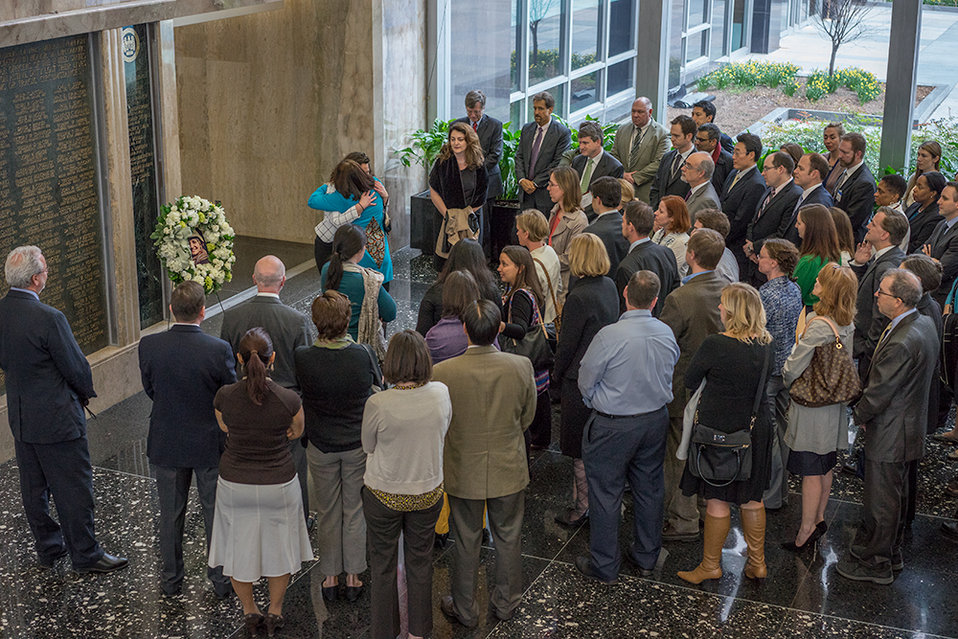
Friends and Family of Anne Smedinghoff Pay Tribute to her Service

The friends and family of Anne Smedinghoff gather to pay tribute to her service at the U.S. Department of State in Washington, D.C., on April 4, 2014. Smedinghoff was killed in the line of duty in Afghanistan on April 6, 2013.